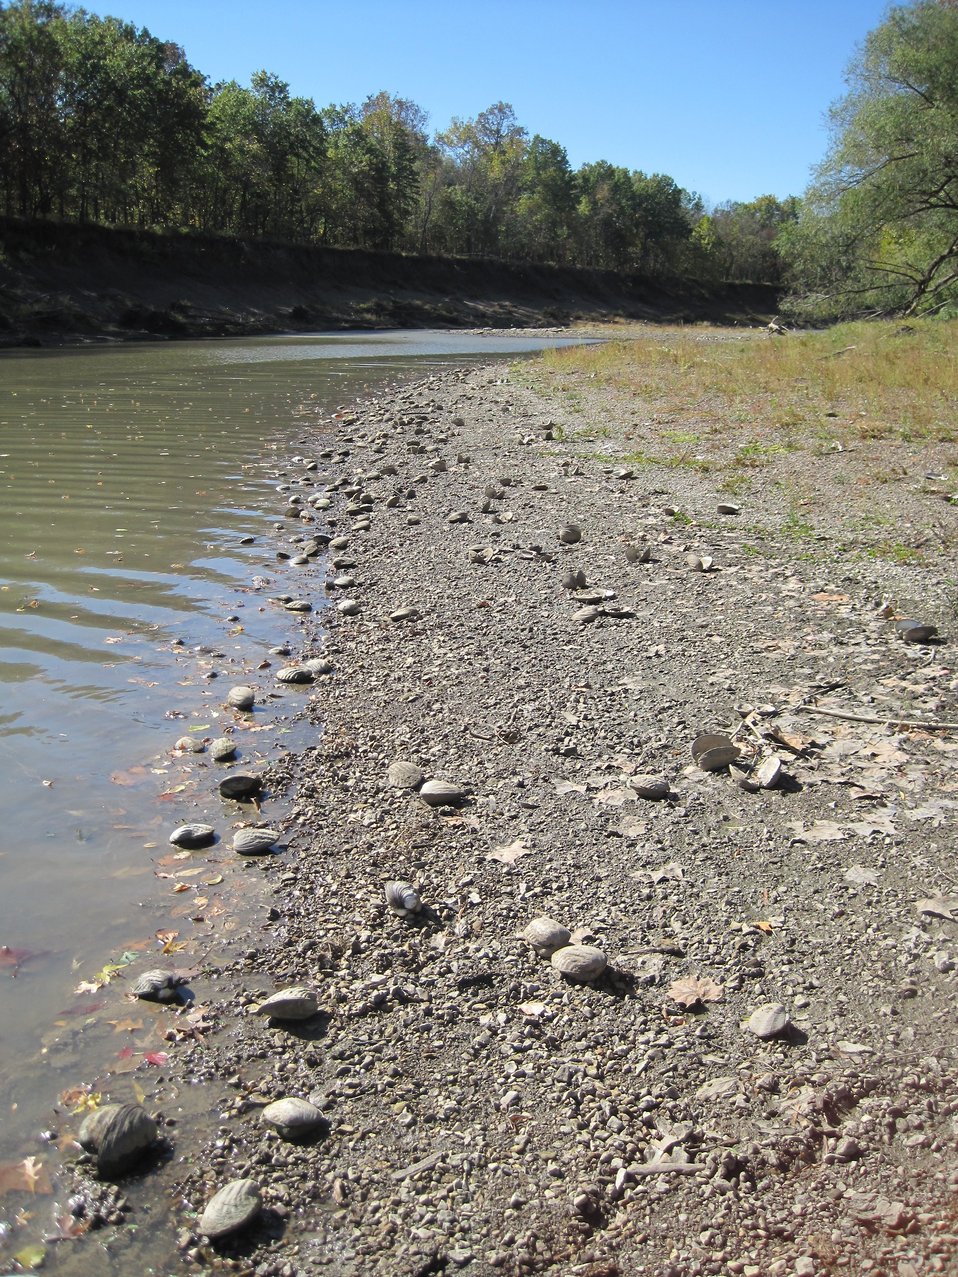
Mussel stranding2, Marais de Cygnes Refuge

Another view of mussel strandings in fall 2012 at Marais de Cygnes National Wildlife Refuge in Kansas.